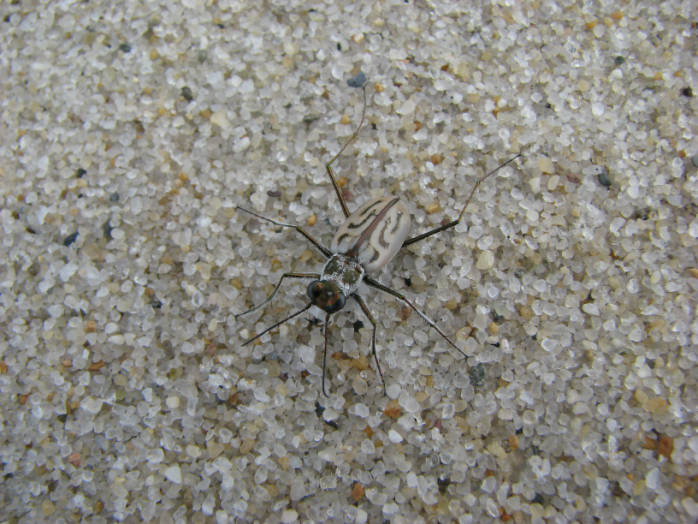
Northeastern Beach Tiger Beetle